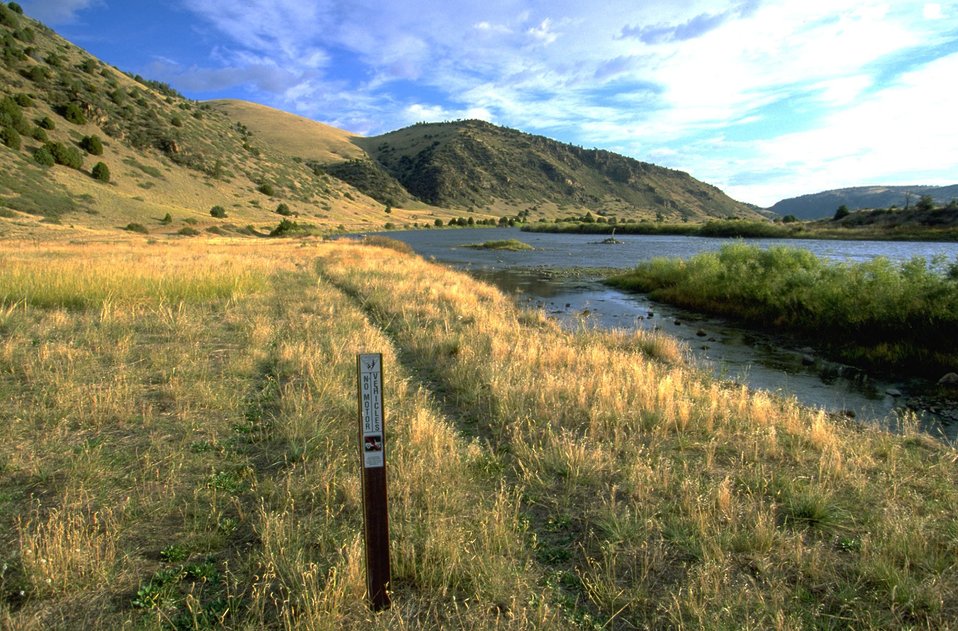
Closed road in a rehabilitation area along the Madison